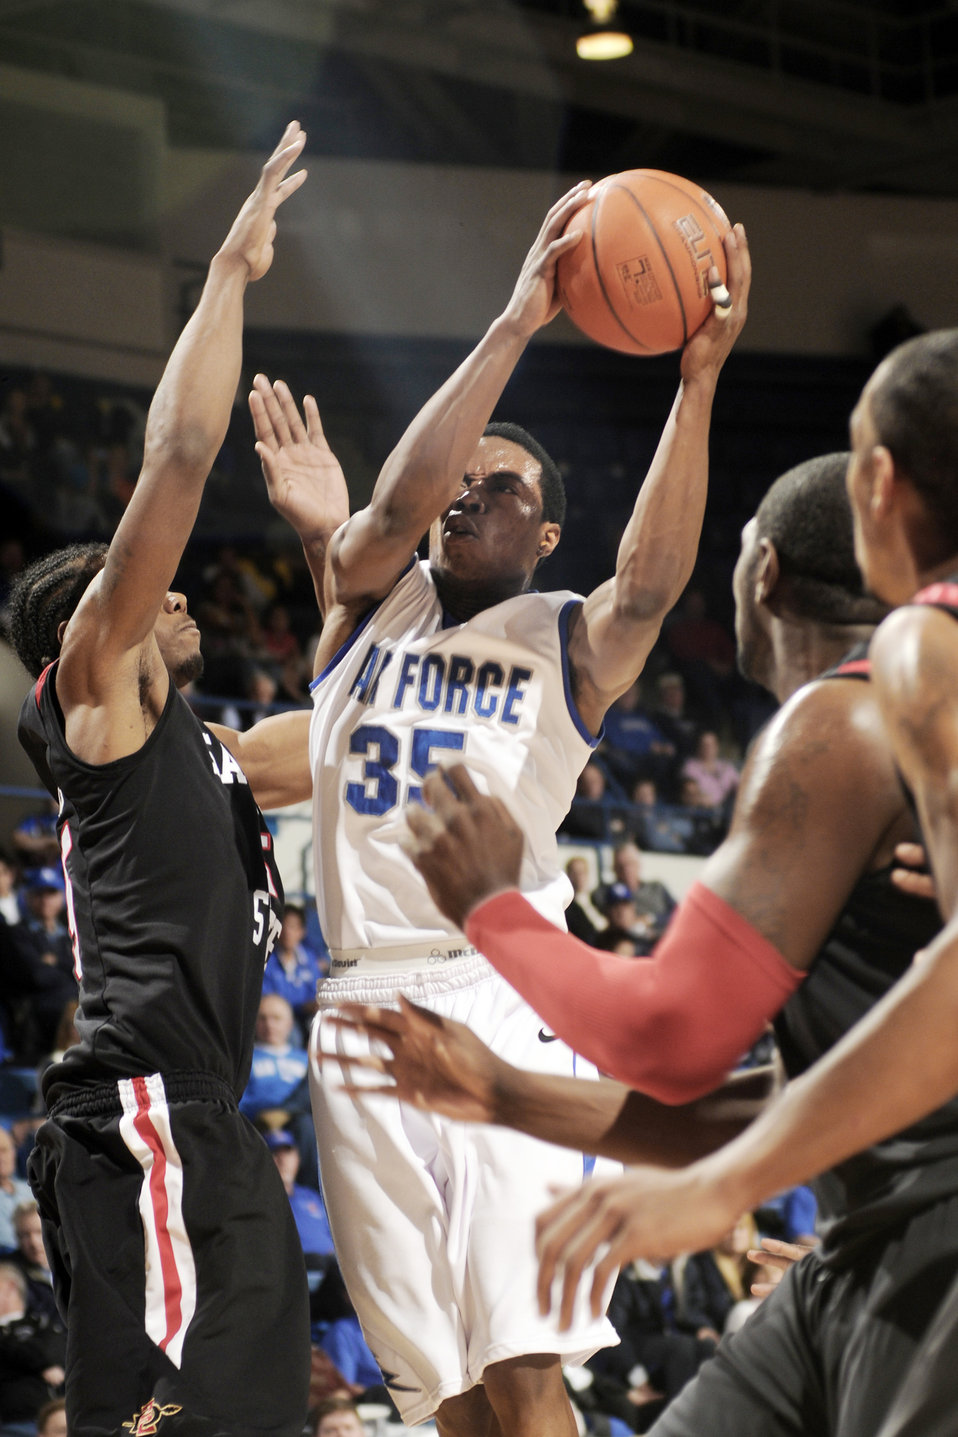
Air Force basketball falls to San Diego, 61-42.

Evan Washington, a junior guard fights toward the basket as San Diego's Kawhi Leonard, a freshman forward, defends during the Falcon's game against San Diego March 6, 2010, at the U.S. Air Force Academy's Clune Arena in Colorado. Air Force fell to San Diego 61-42.